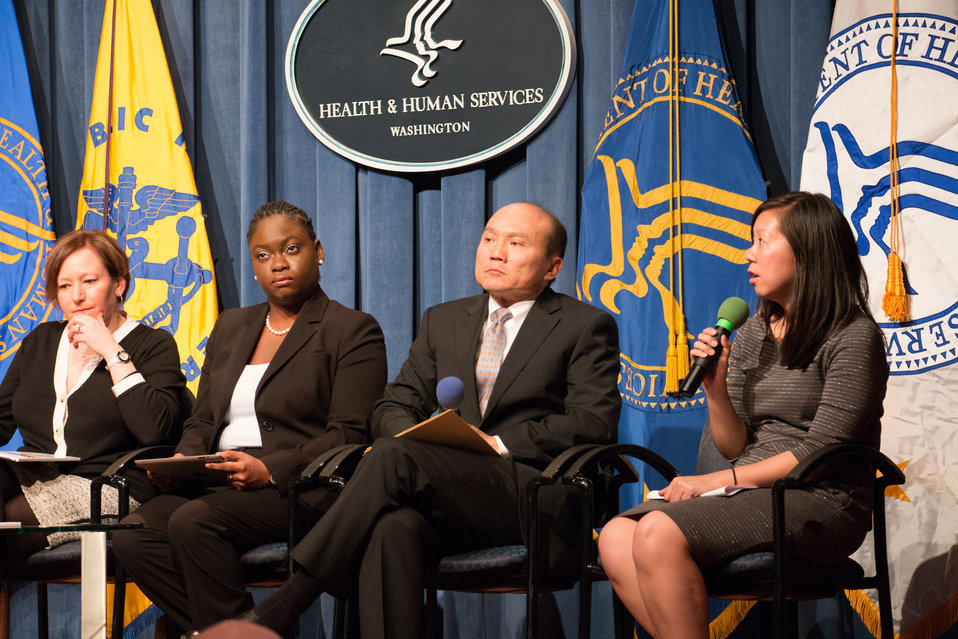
VHAP Launch (303 of 511)